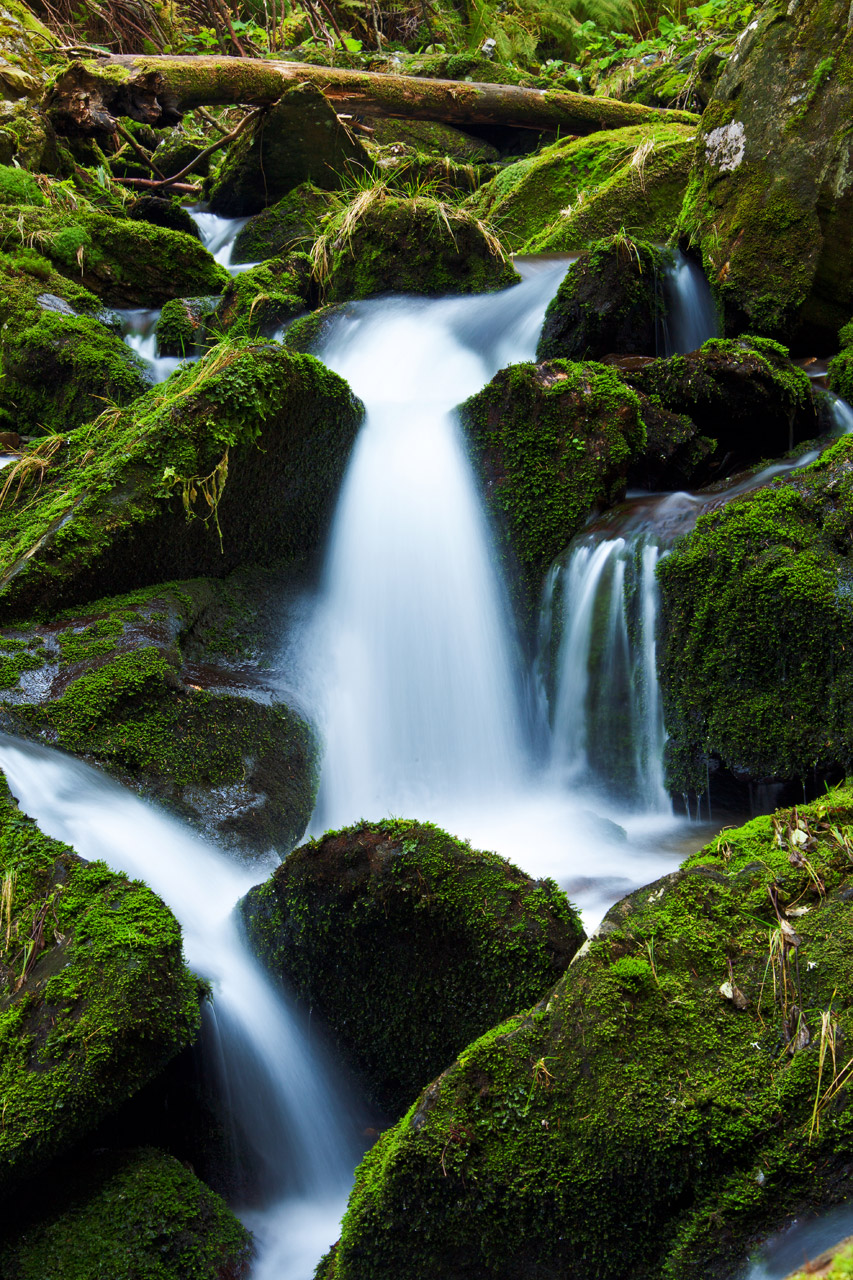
Mountain stream and moss at bila opava walk in czech republic.